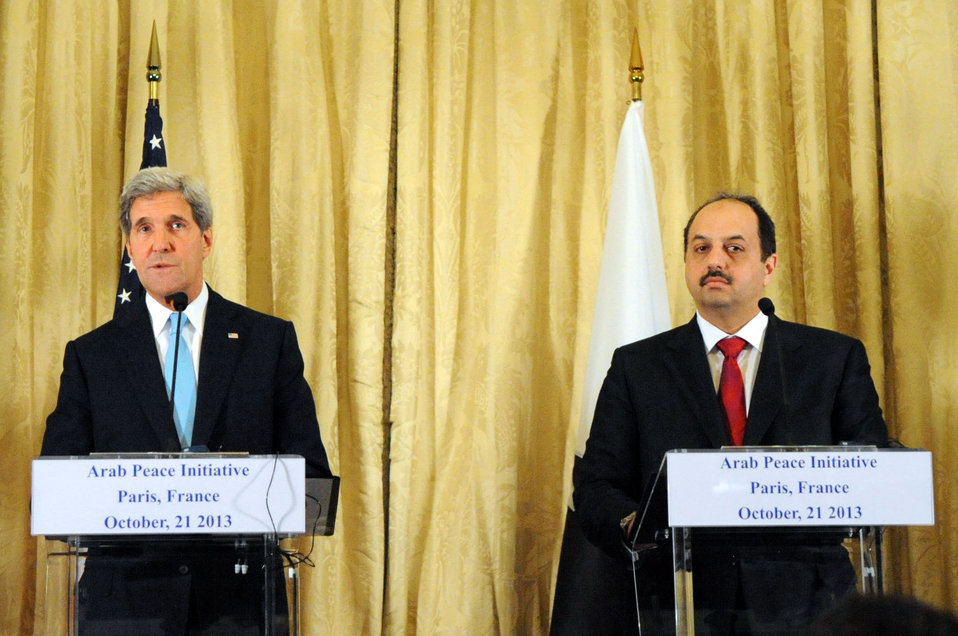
Secretary Kerry and Qatari Foreign Minister al-Attiyah Address Reporters

U.S. Secretary of State John Kerry and Qatari Foreign Minister Khalid al-Attiyah, the Chairman of the Arab Peace Initiative, hold a news conference after a meeting of the group in Paris, France, on October 21, 2013. You can view Secretary Kerry's remarks here: www.state.gov/secretary/remarks/2013/10/215713.htm.